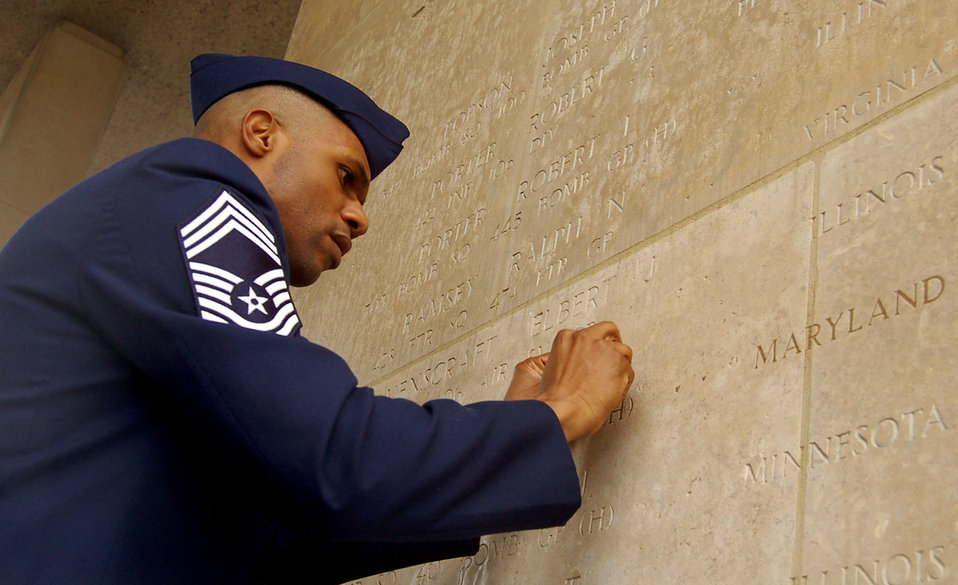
World War II MIAs recovered in Germany

Chief Master Sgt. Kenneth Williams places a rosette next to Tech. Sgt. Leonard J. Ray's engraved name signifying he is no longer missing in action Feb. 20 at the Henri-Chapelle Cemetery and Memorial in Belgium. Sergeant Ray was part of the McMurray Crew in the Army Air Corps, which flew a B-24 bomber during World War II. Chief Williams is the U.S. Air Force senior enlisted leader for Supreme Headquarters Allied Powers Europe.